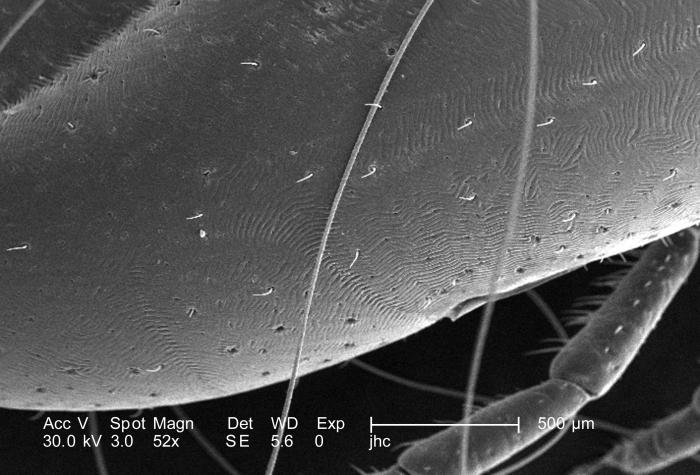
Under a low magnification of 52X, this scanning electron micrographic (SEM) image depicted a dorsal view of an unidentified engorged female tick which had been extracted from the skin of a pet cat while in the process of obtaining its blood meal. Seen here, is the right margin of the tick's blood-engorged abdomen.Note in PHIL 9959 and 9960, that in the case of another tick specimen, its entire dorsal abdomen is covered by its chitinous scutum, or 'shield', categorizing it as a male. In this specimen, the scutum only partially covers the dorsal abdomen, which identifies this tick as a female.Ticks belong to the Phylum Arthropoda, due to the fact that they maneuver upon jointed ( 'Arthro') legs ('poda'), as well as the Class Arachnida, for they've eight of these legs, unlike insects, which use six legs to move about.